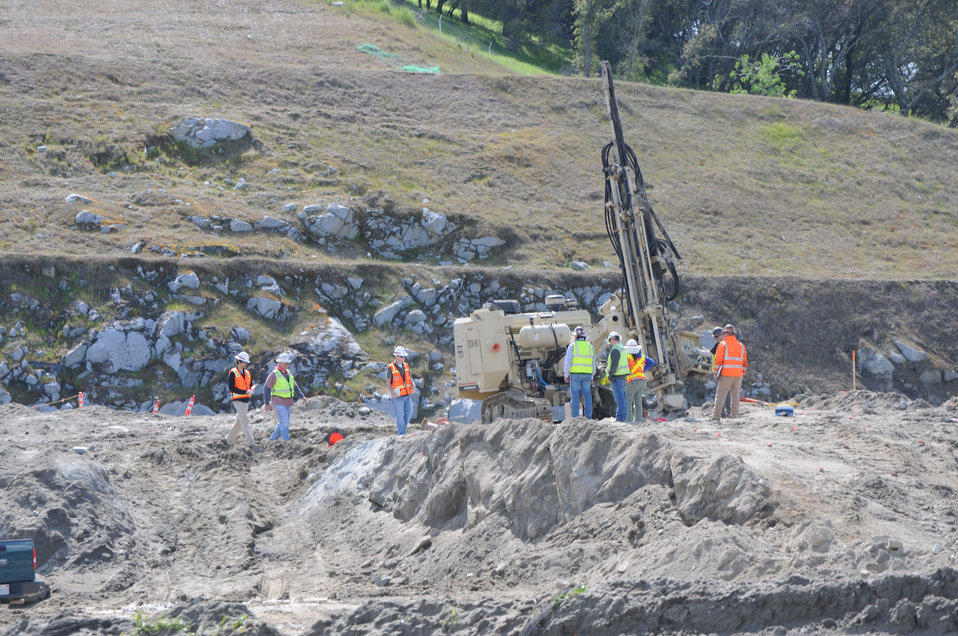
Underground blasting at Folsom Dam in Folsom, Calif., originally scheduled for March 23, will be postponed until March 25 at the soonest, said Jon Revolinsky, a resident engineer for the U.S. Army Corps of Engineers Sacramento District. (U.S. Army Photo/Todd Plain)

Citing weather concerns, “We are going to err on the side of caution,” said Revolinsky.

Pictured above is the planned blasting site near the dam, where holes were dug earlier this week in preparation of the blast. More information about the blasting can be found here:
www.spk.usace.army.mil/organizations/cespk-pao/press rele...

Any questions or concerns about the blasting activities can be directed to Granite Construction Company’s project communication number at 916-294-2800 or the U.S. Army Corps of Engineers Sacramento District at 916-557-5107.